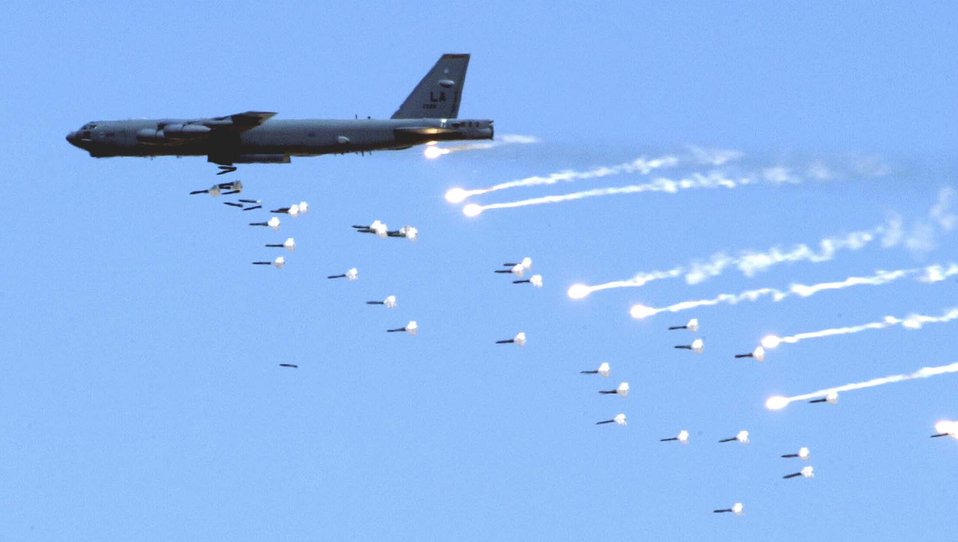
Firepower demo

NELLIS AIR FORCE BASE, Nev. -- A B-52 Stratofortress from Barksdale Air Force Base, La., drops live ordnance over the Nevada Test and Training Range near here May 12 during an Air Force firepower demonstration. The demonstration showcases the Air Force's air and space capabilities.